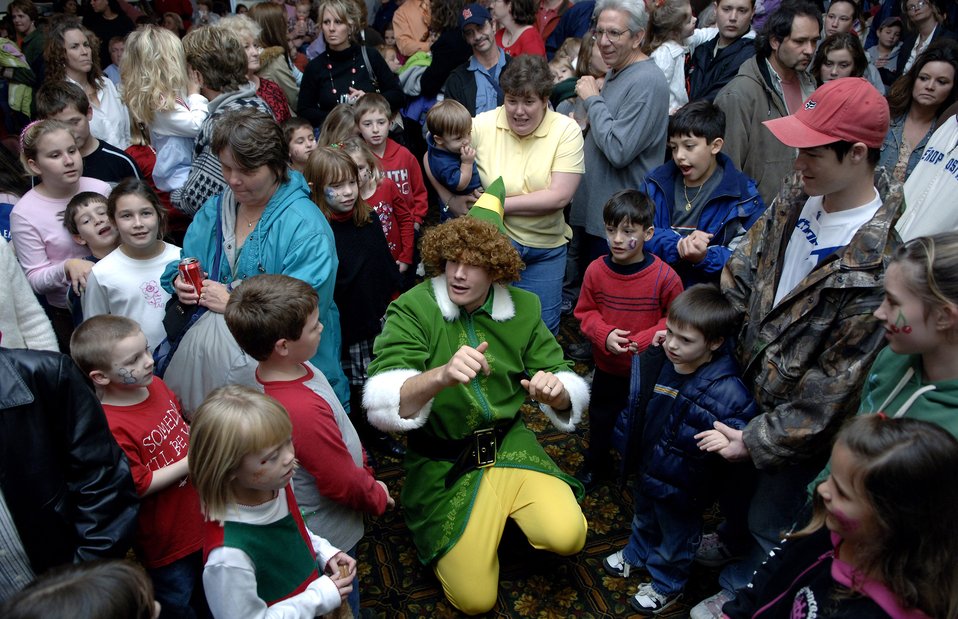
Santa brings holiday cheer to Arnold party